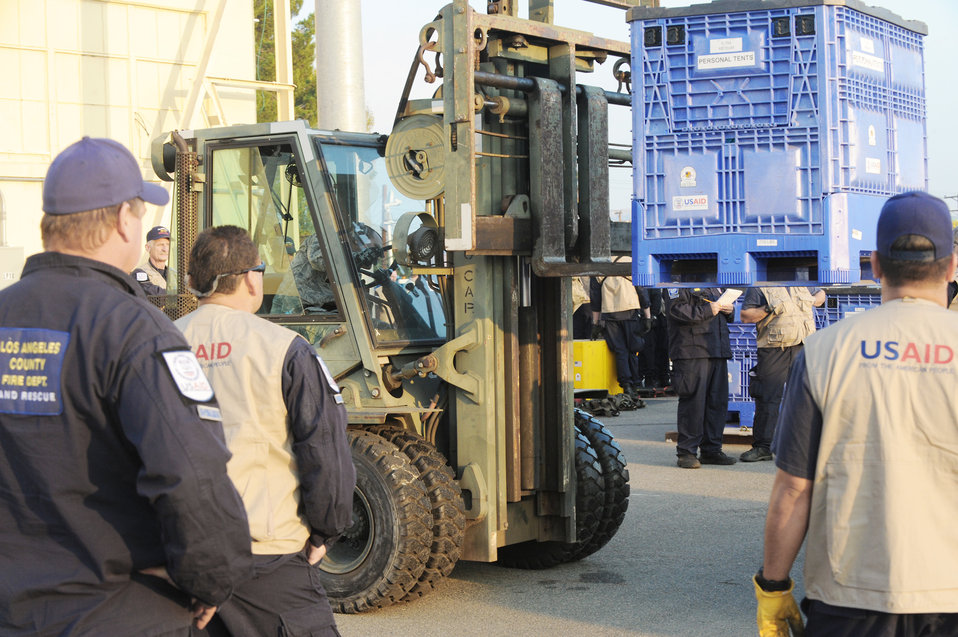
Airmen load C-17s for Haitian relief

Relief workers and search and rescue teams use March Air Reserve Base, Calif., as a staging area to assemble supplies, people and equipment Jan. 13, 2010, following the recent 7.0-magnitude earthquake in Haiti. All will be loaded on a C-17 Globemaster III and flown into Port-au-Prince, Haiti. The aircraft is assigned to the 60th Air Wing at Travis Air Force Base, Calif.,